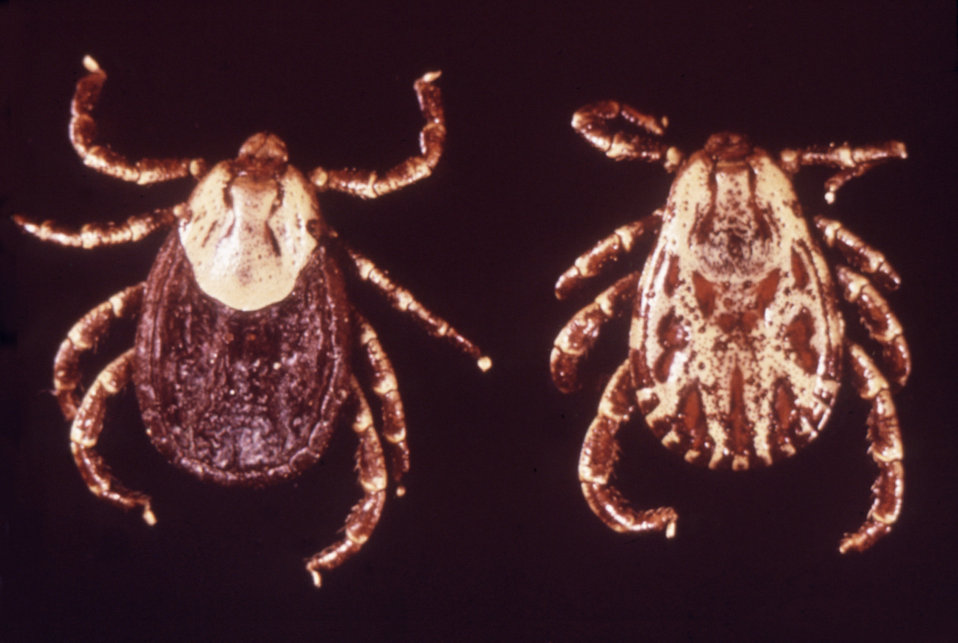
This photograph of 2 ticks was taken during a 1972 study of disease carriers and pests found in and around migrant labor camps.